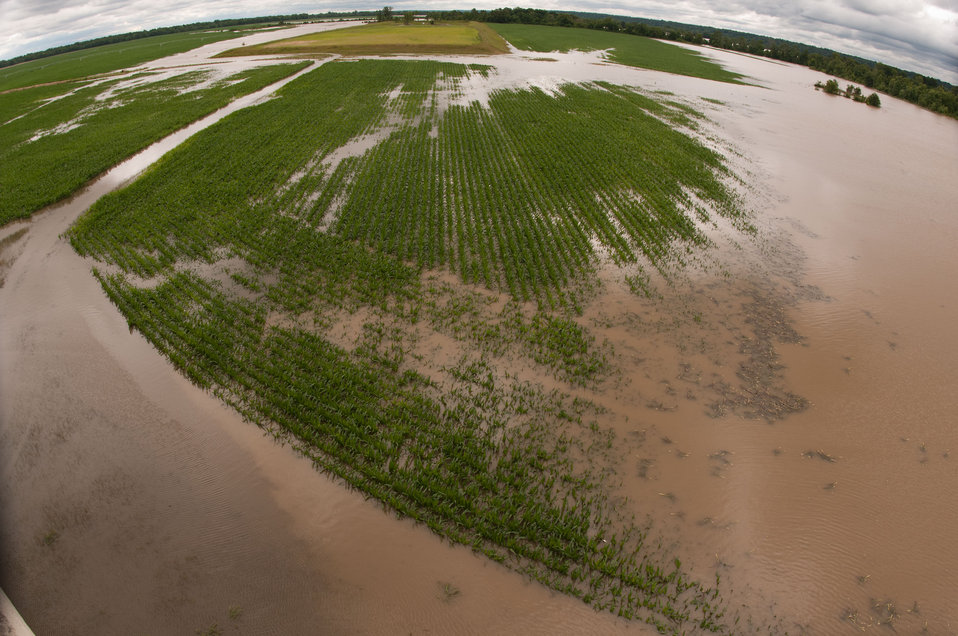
Mississippi River floodwaters have pushed into Yazoo River and into this cornfield near Yazoo City, MS, on Monday, May 16. 2011.